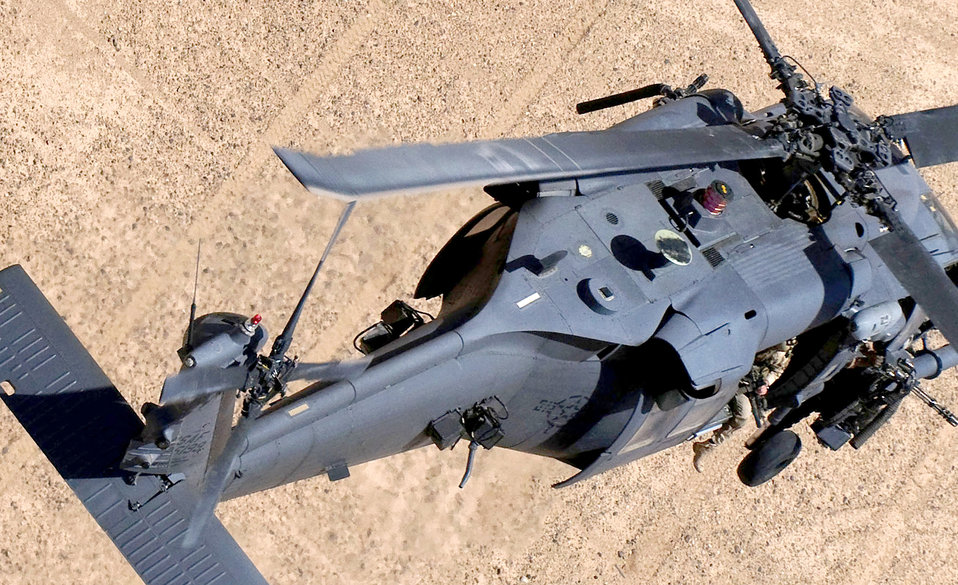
33rd Rescue Squadron crew earns MacKay Trophy

An HH-60G Pavehawk from the 129th Expeditionary Rescue Squadron flies June 12, 2009, over Afghanistan. The crew of